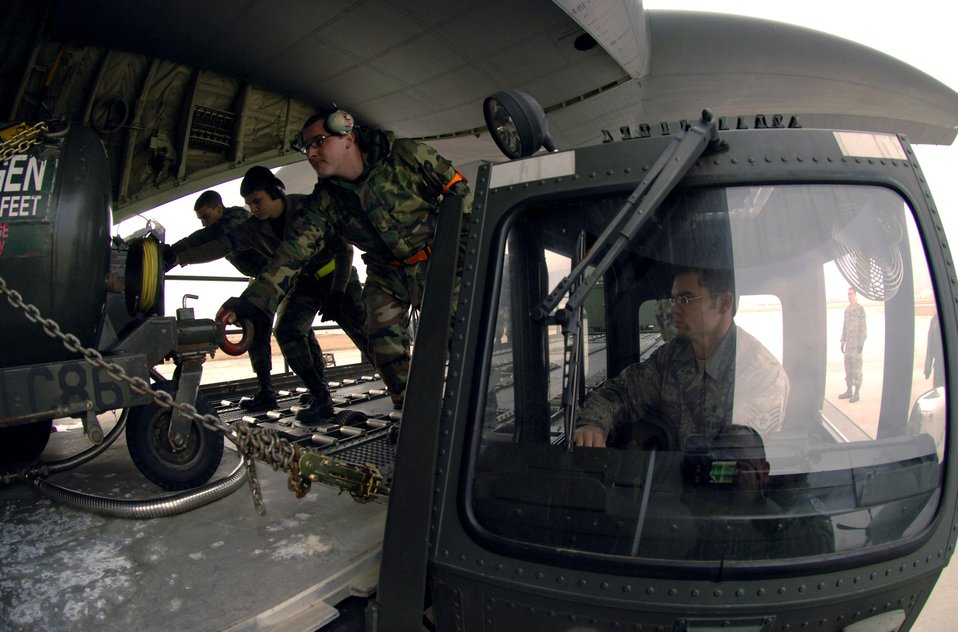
Total force provides seamless airlift support

Tech. Sgt. Anthony Malmquist assists Senior Airman Tom Reilly (2nd from right) in loading 25,000 pounds of cargo aboard a C-130 Hercules Jan. 9 at Aviano Air Base, Italy. The cargo, bound for Zaragoza Air Base, Spain, was flown by members of the 38th Airlift Squadron from Ramstein Air Base, Germany, in support of F-16 Fighting Falcons conducting training in Spain. Sergeant Malmquist is an aerial porter, and Airman Reilly is a Rhode Island Air National Guard crew chief.